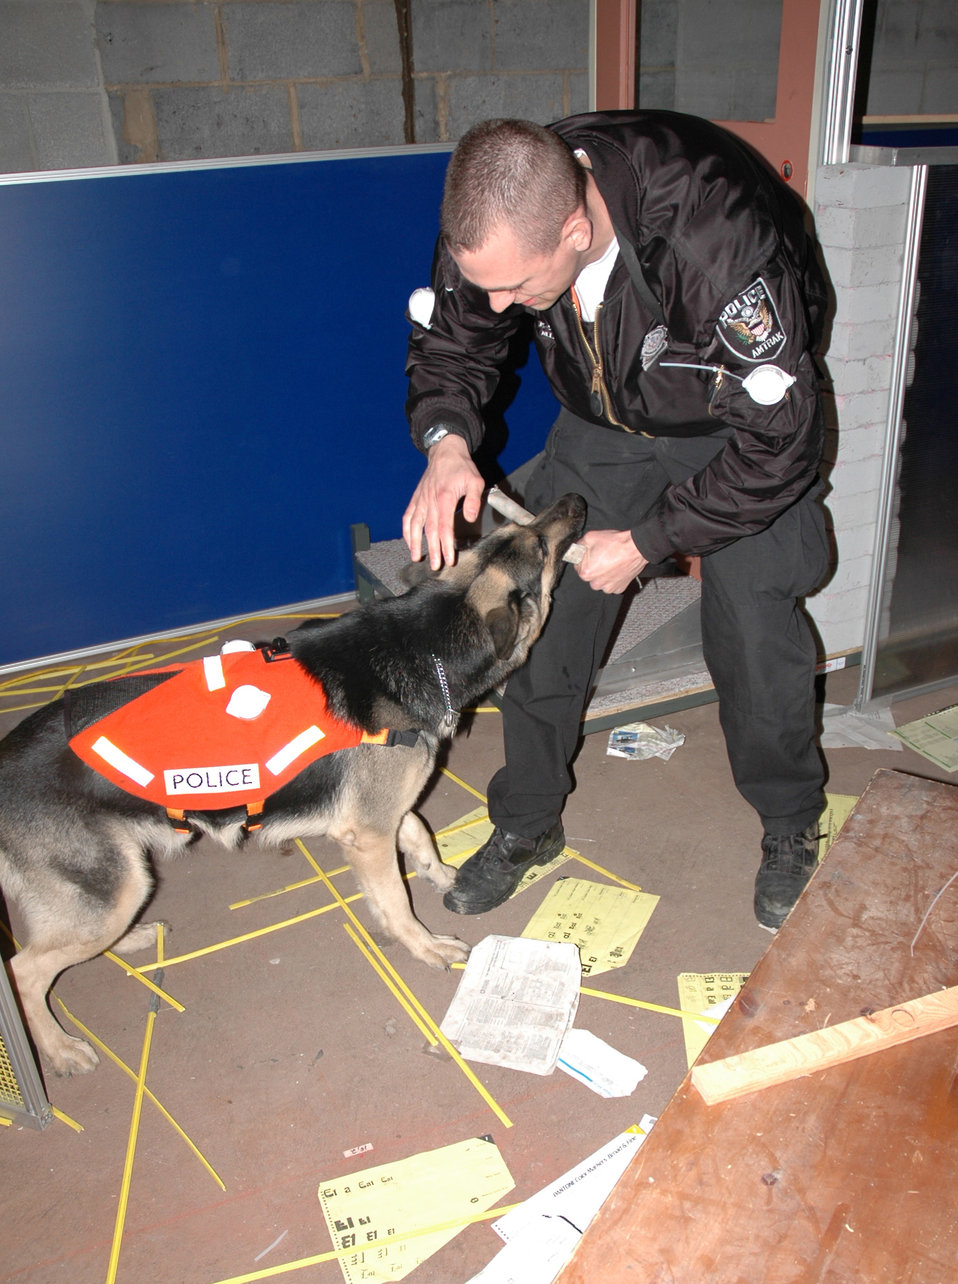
Test Arena for Robots and Dogs

Police Officer Michael Millsaps Jr. of the Amtrak Police Department rewards his dog Bak for finding a hidden gun under debris at the NIST reference test arena for urban search and rescue and explosive ordnance disposal robots. The white transmitters worn by both Millsaps and Bak can be used to track and record their movements as they proceed through the arena. Similar transmitters are attached to rescue robots and are used to analyze searching performance.